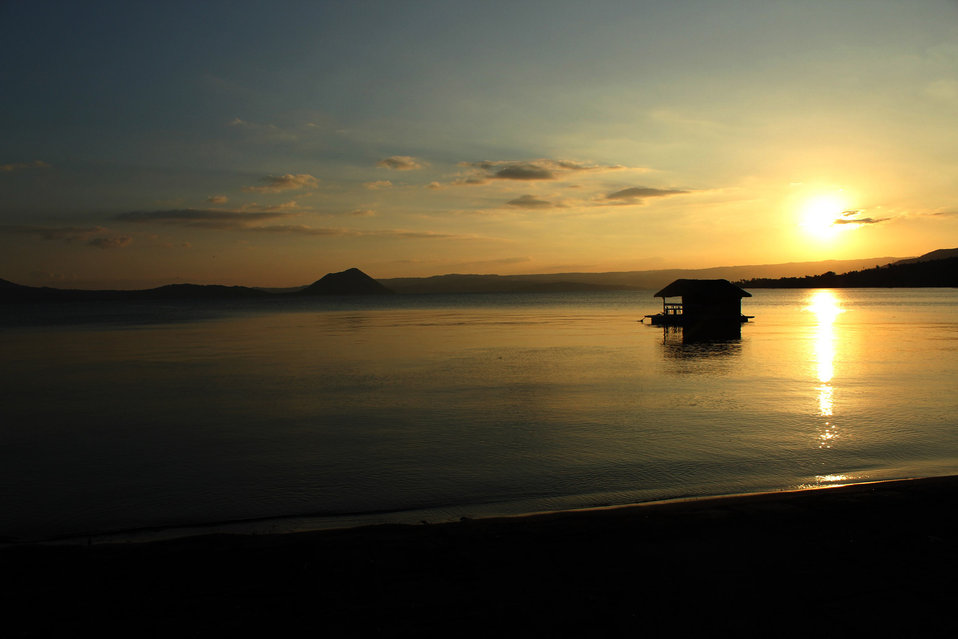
Sunset in my hometown 3

Sunset in the philippines.